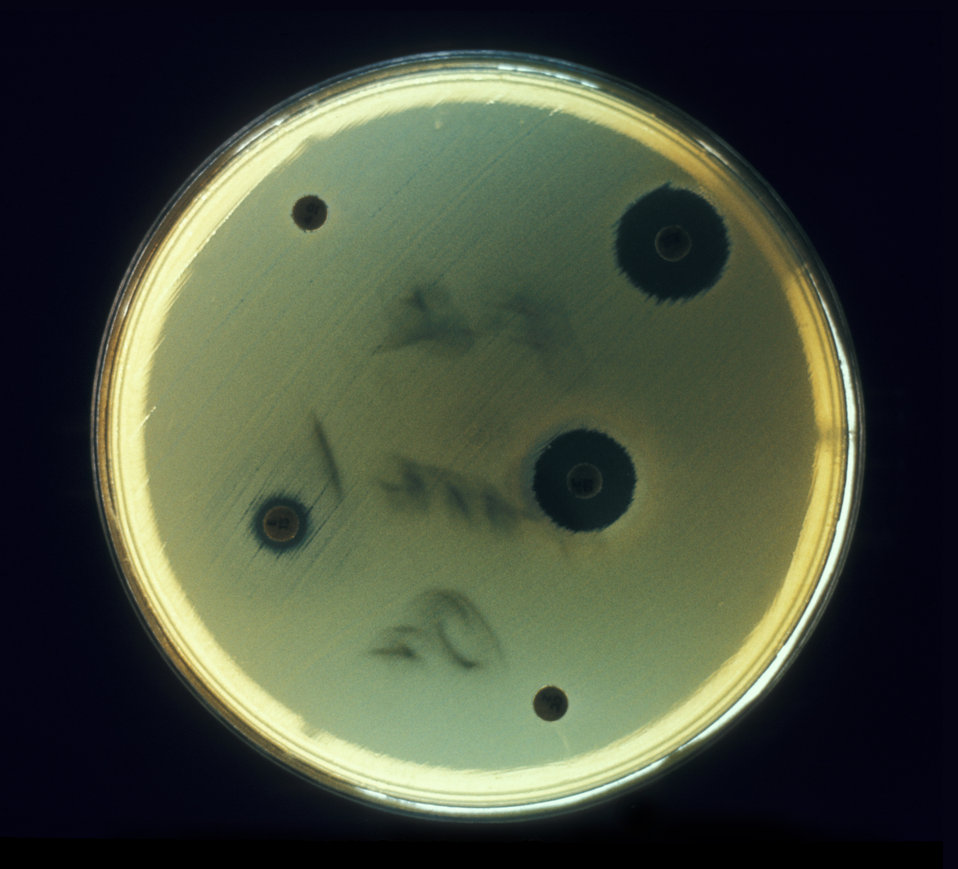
Aerobic bacteria, Escherichia coli, cultured on an agar plate for drug sensitivity test in an anaerobic environment.